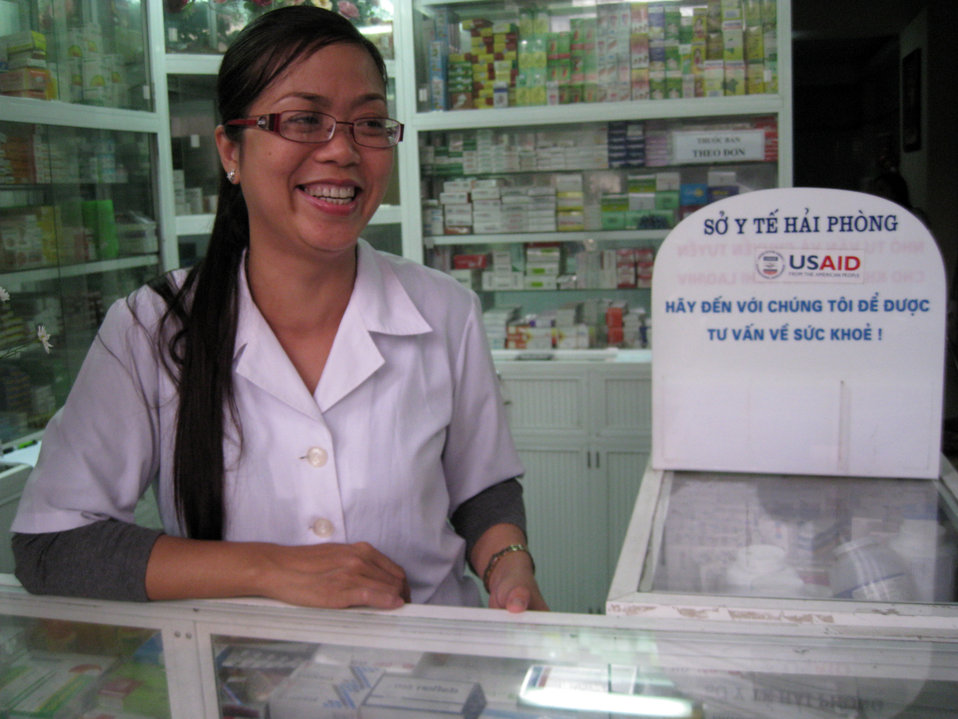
Pharmacist Tran Thi Ha benefits from USAID's Public-Private TB services mix program.